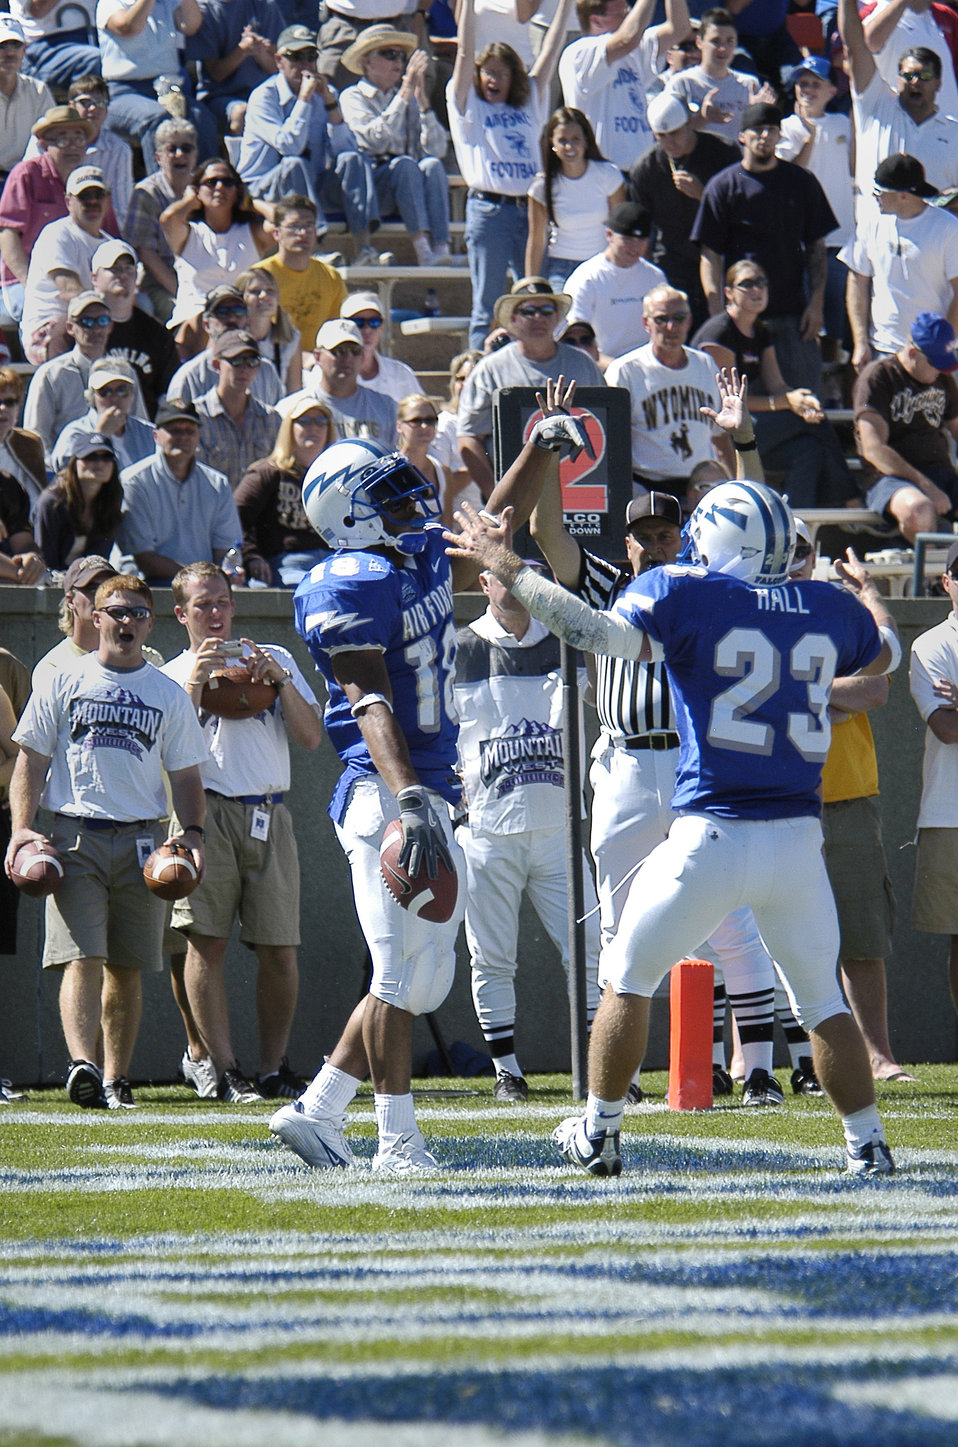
U.S. AIR FORCE ACADEMY, Colo. -- Air Force halfback Chad Hall, 23, helps fellow running back Justin Handley celebrate his first career Falcon touchdown here Sept. 17 against the University of Wyoming. Hall later scored his first career Air Force touchdown in the same game. The Cowboys went on to edge the Falcons 29-28.